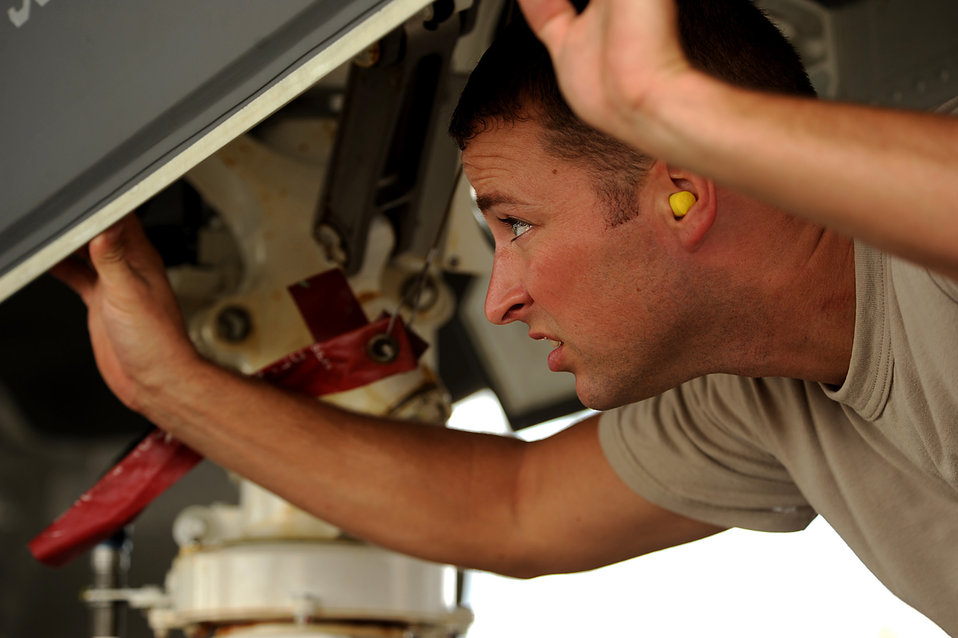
F-35A Lightning II joint strike fighter Crew Chief Staff Sgt. Jeremy Deck from the 58th Aircraft Maintenance Unit at Eglin Air Force Base, Fla., checks over the jet after a local training mission over the Emerald Coast Sept. 18, 2012.